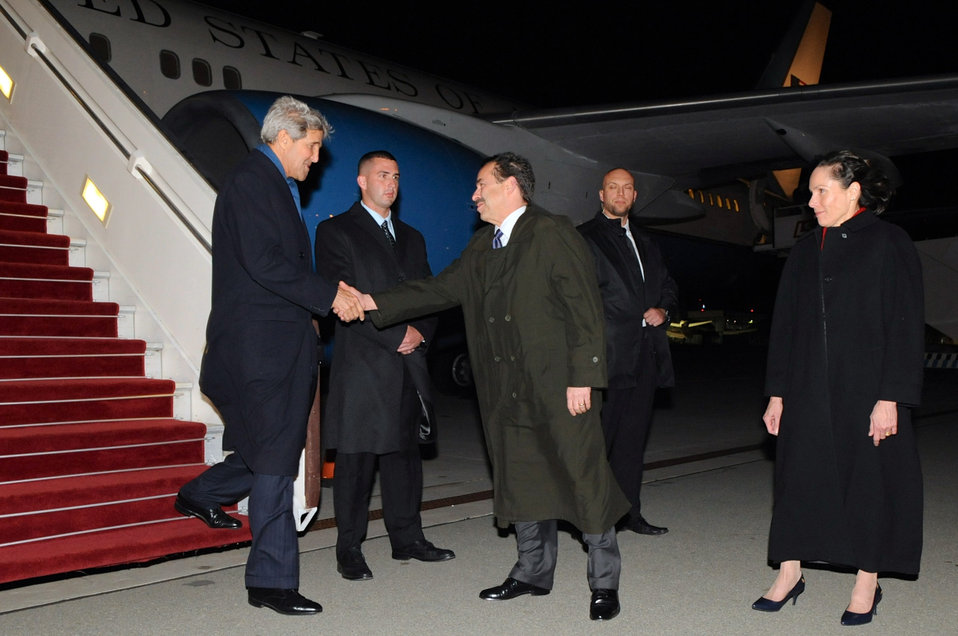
Secretary Kerry Is Greeted By Ambassador Mull and His Wife Upon Arriving in Warsaw, Poland

U.S. Ambassador to Poland Stephen Mull and his wife, Cheri Stephan, greet U.S. Secretary of State John Kerry upon his arrival in Warsaw, Poland, on November 4, 2013.